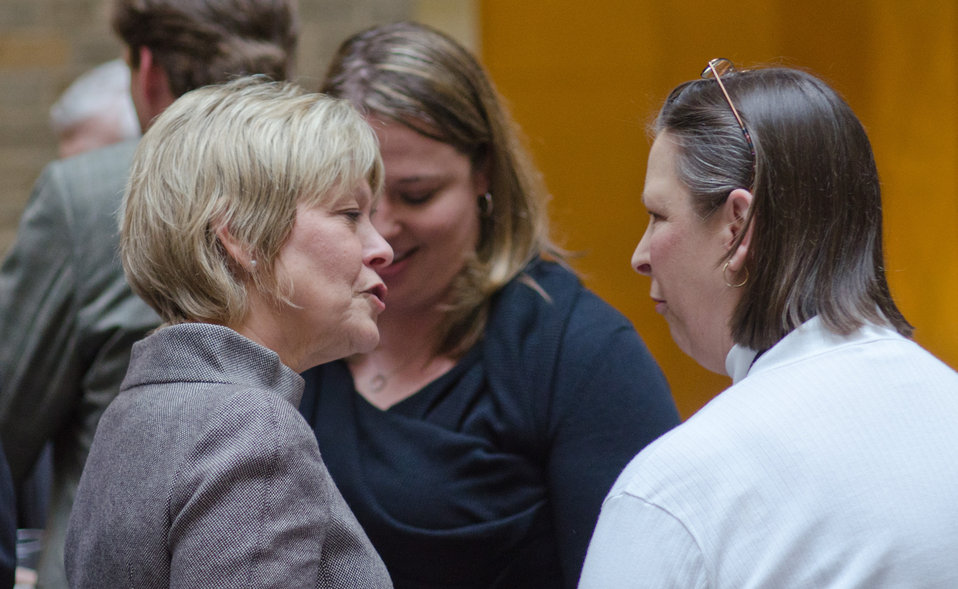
Christie Vilsack (left), wife of Agriculture Secretary Tom Vilsack speaks with an employee during a get together of colleagues for conversation and a break from the day-to-day routine on the Patio of the Whitten Building in Washington, D.C. on Friday, March 25, 2011. Secretary Vilsack sponsored the pop and pretzel event “to help recognize the great work we are doing together for the American people'. The event enjoyed standing room only, attendance.